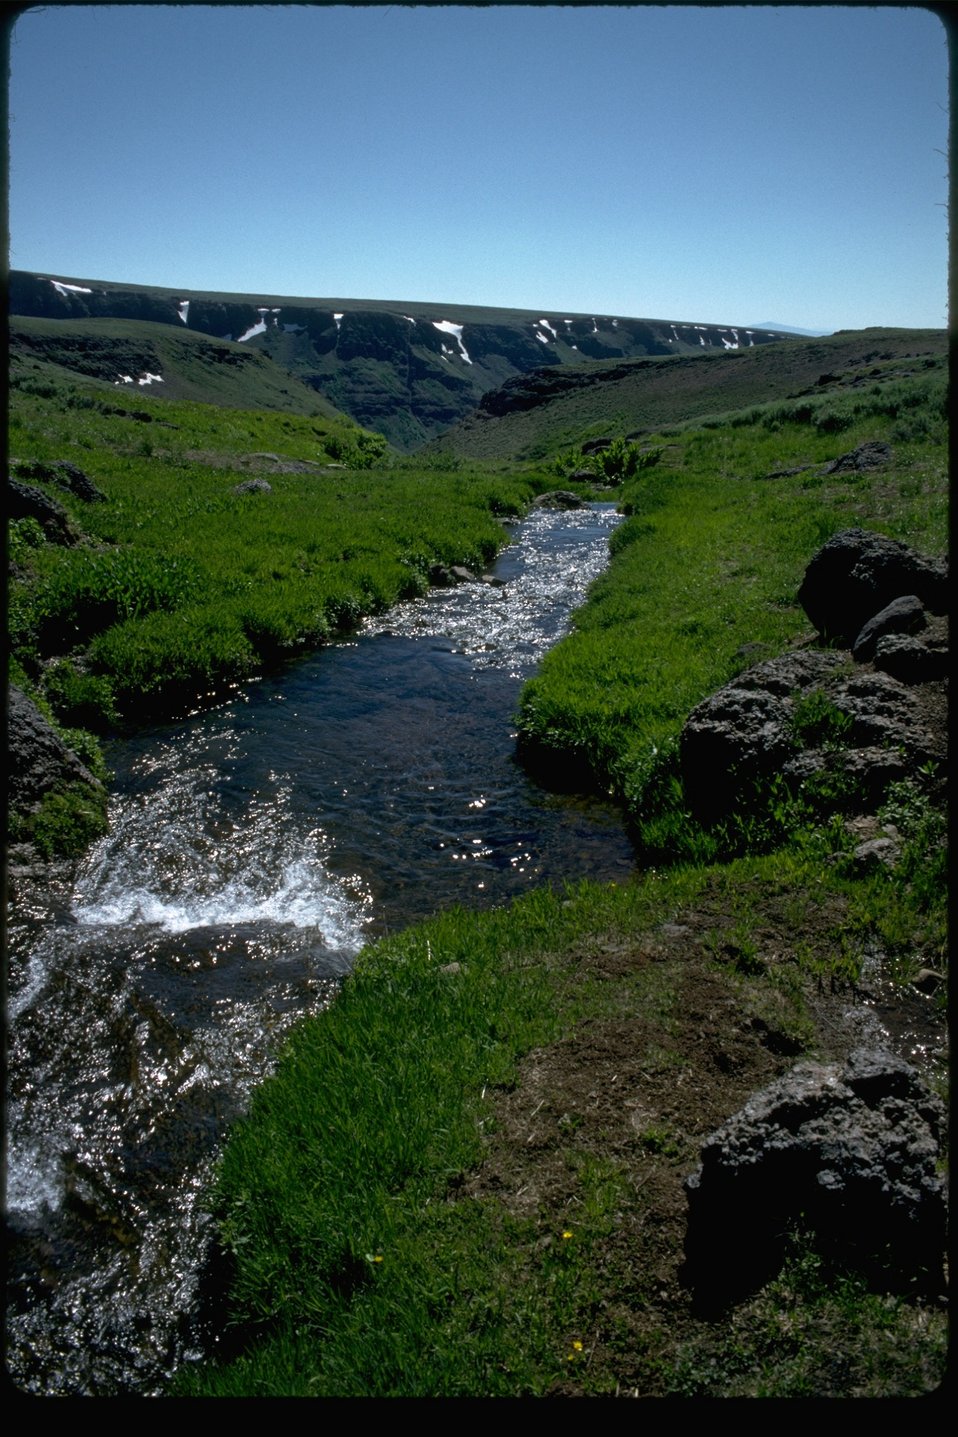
High mountain stream at the head of Big Indian Canyon on Steens Mountain, Oregon.